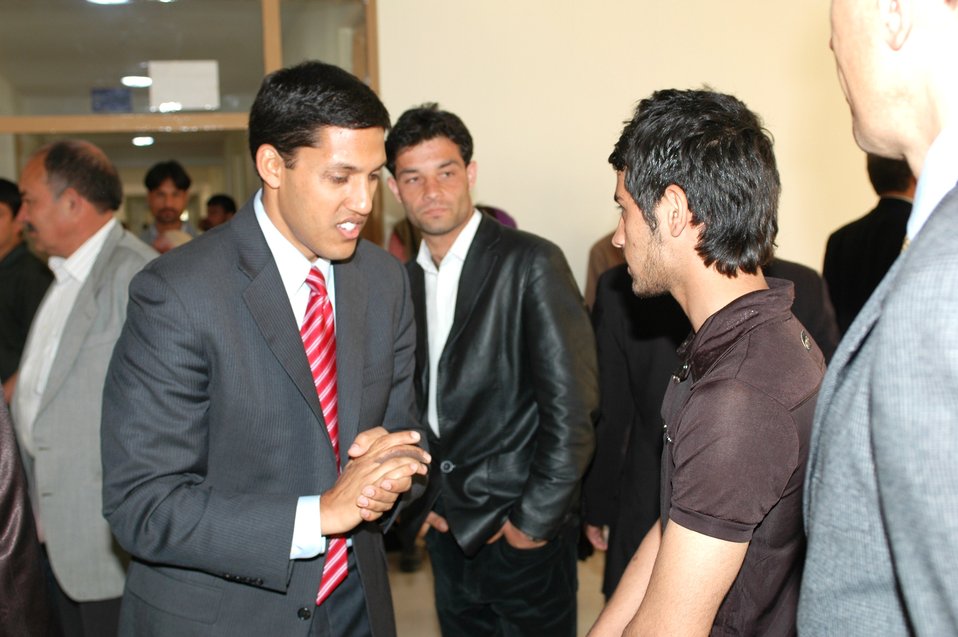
Dr Shah Visits Votech in Kabul